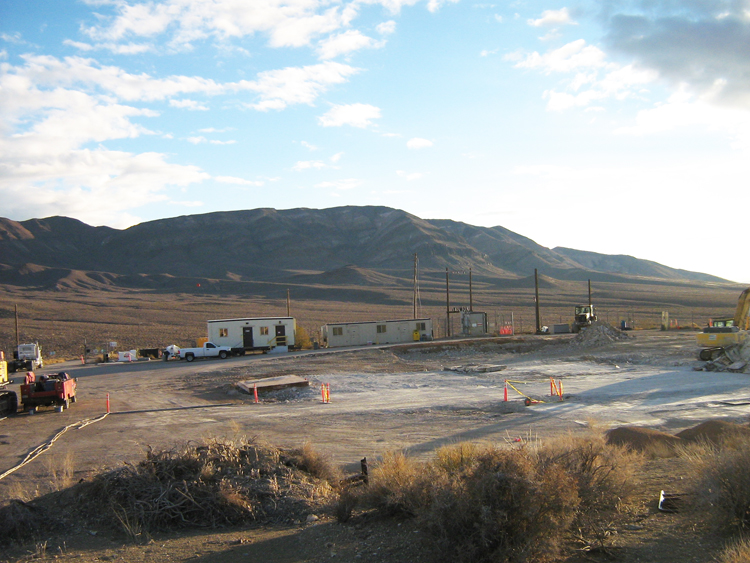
Recovery Act Workers Demolish Facility Tied to Project Pluto History

After photo of the site of the Pluto Disassembly Facility show the Recovery Act at work at the Nevada National Security Site.
***

Recovery Act workers safely hauled the last demolition waste from the Pluto Disassembly Facility to disposal facilities Jan. 11, 2011. The project is slated for completion after workers finish installing a concrete cap over the below-ground level where the facility stood. “Without Recovery Act funding, the demolition of Pluto would not have been feasible for several more years,” Federal Sub-Project Director Kevin Cabble said.

In the late 1950s and early 1960s, the Pluto facility was used to develop the world’s first nuclear-powered ramjet engine for nuclear-propelled, low-altitude missiles.